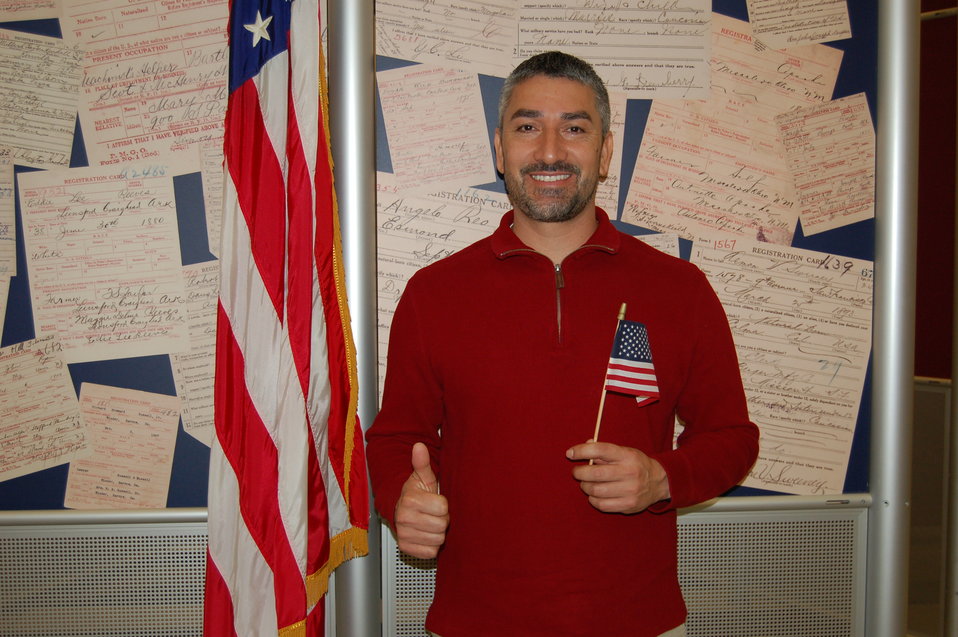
New Citizens